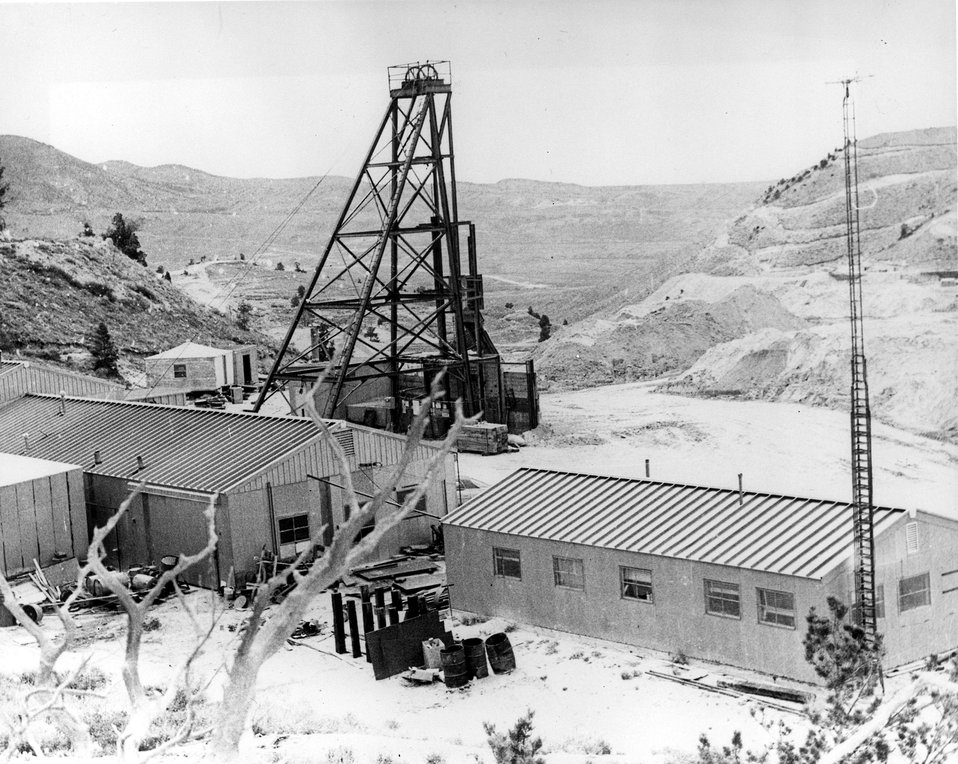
A Western Nuclear Inc. mine near Jeffrey City, Wyoming is being drilled. When photographed the mine is about 500 feet deep and is expected to be about 1,700 feet deep when completed. c. 1976